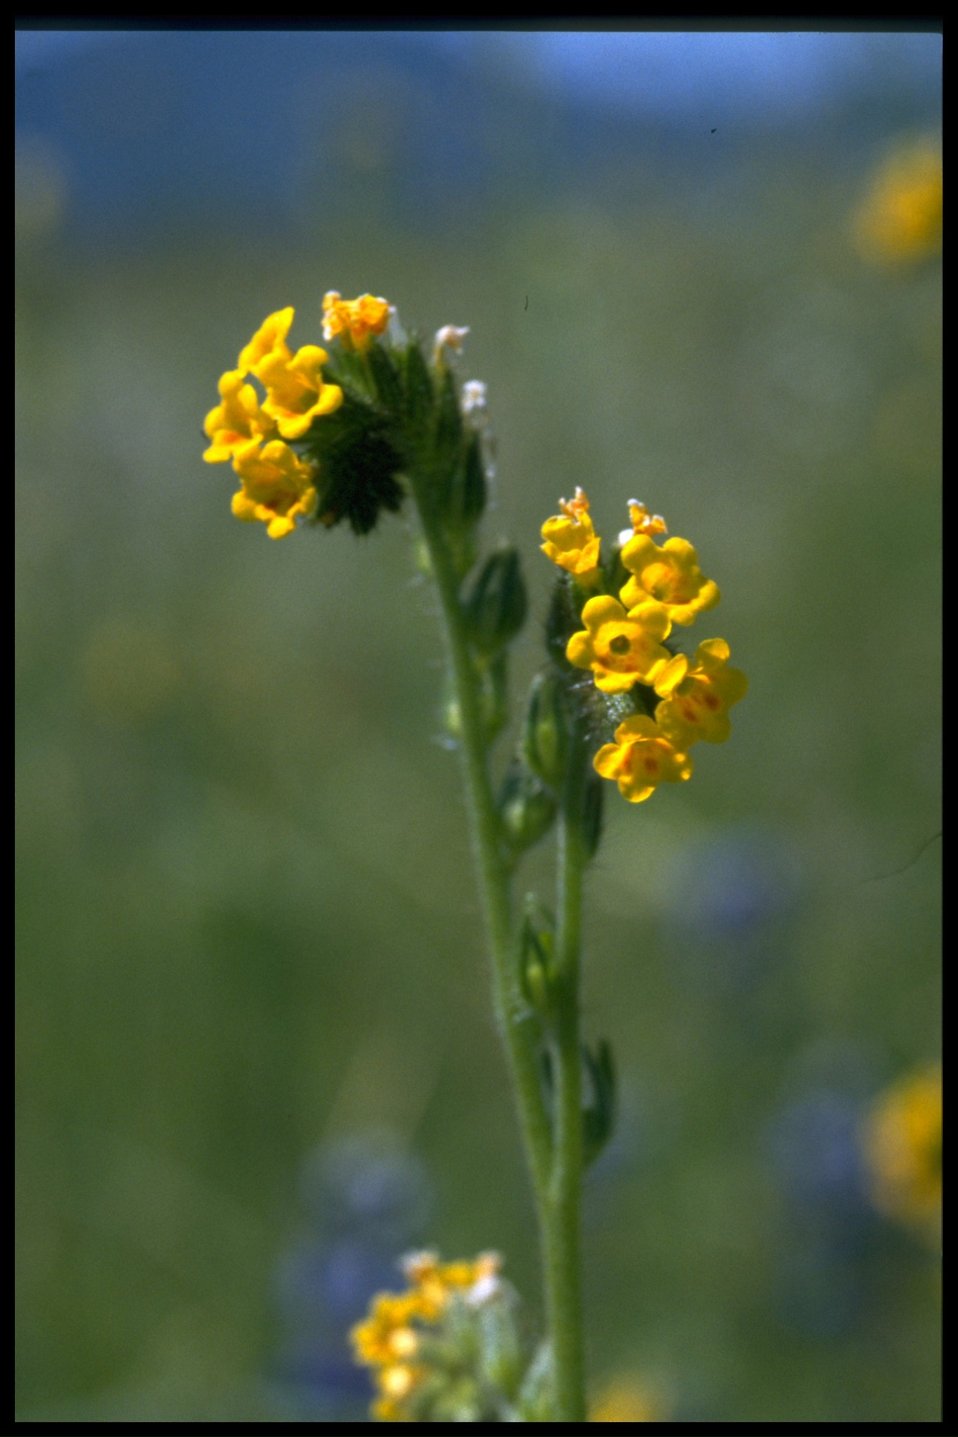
Medium shot of Amsinckia intermedia, Amsinckia menziesii var intermedie.